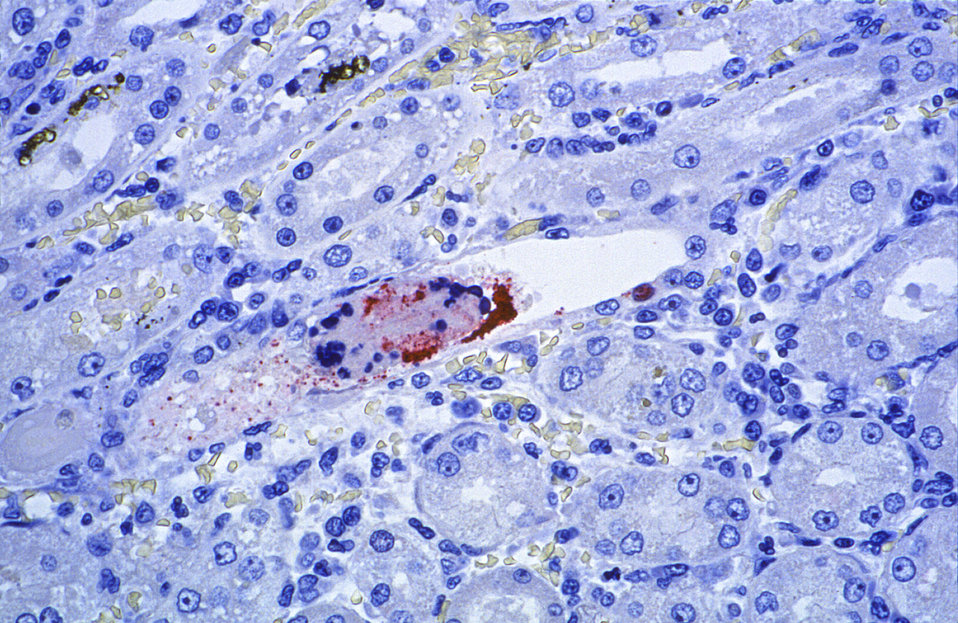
Using immunohistochemical (IHC) technique, this photomicrograph of a canine renal (kidney) tissue specimen, revealed some of the cytoarchitectural histopathologic changes associated with a Nipah virus infection.